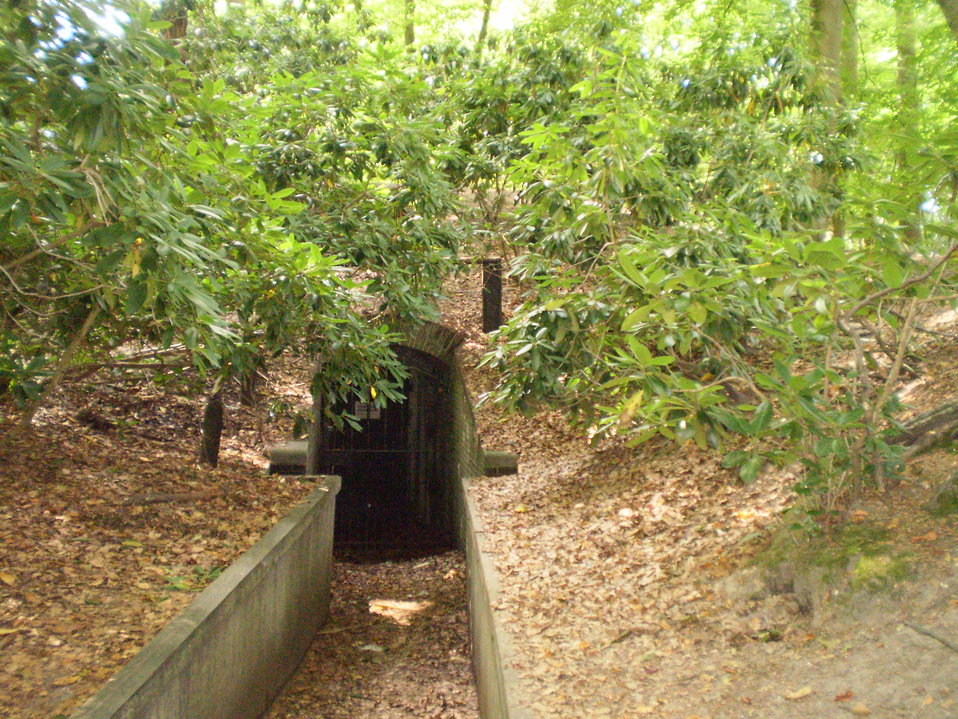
Frysk: Ofbyld oanbean troch Swarte Kees op 22 augustus 2009 Nederlands: IJskelder bij Kasteel Groeneveld (Baarn)